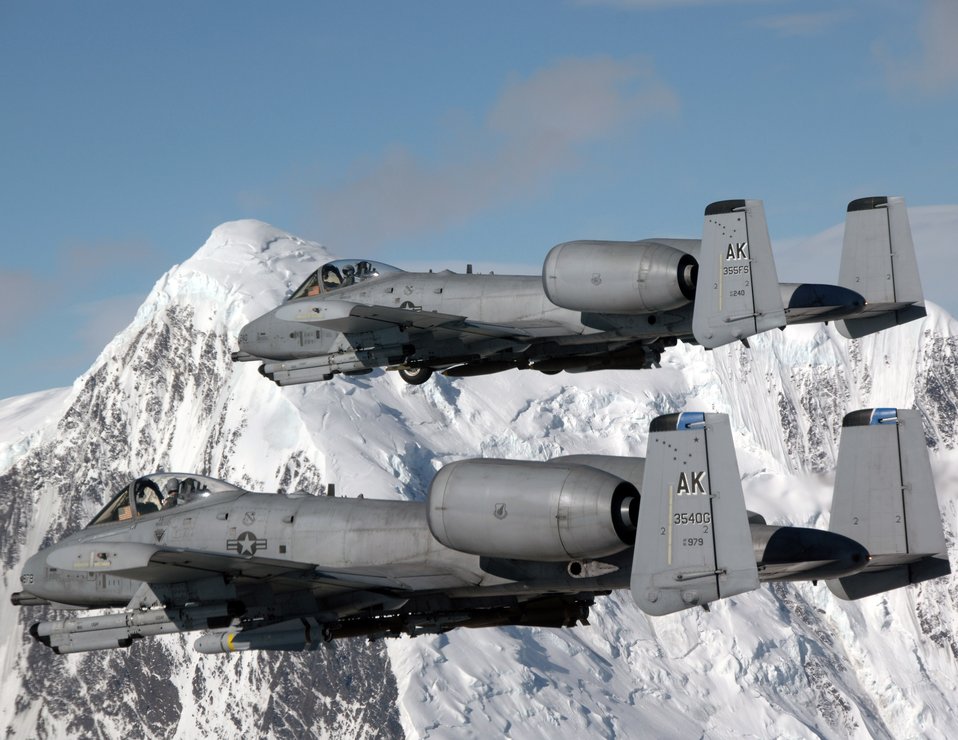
Thunder and lightning

Two A-10 Thunderbolt IIs fly over the Pacific Alaska Range Complex April 24 during live-fire training. The A-10s are from the 355th Fighter Squadron from Eielson Air Force Base, Alaska. Members from the 355th FS are tasked to provide mission ready A-10s and a search and rescue capability, in Alaska and deployed sites worldwide.